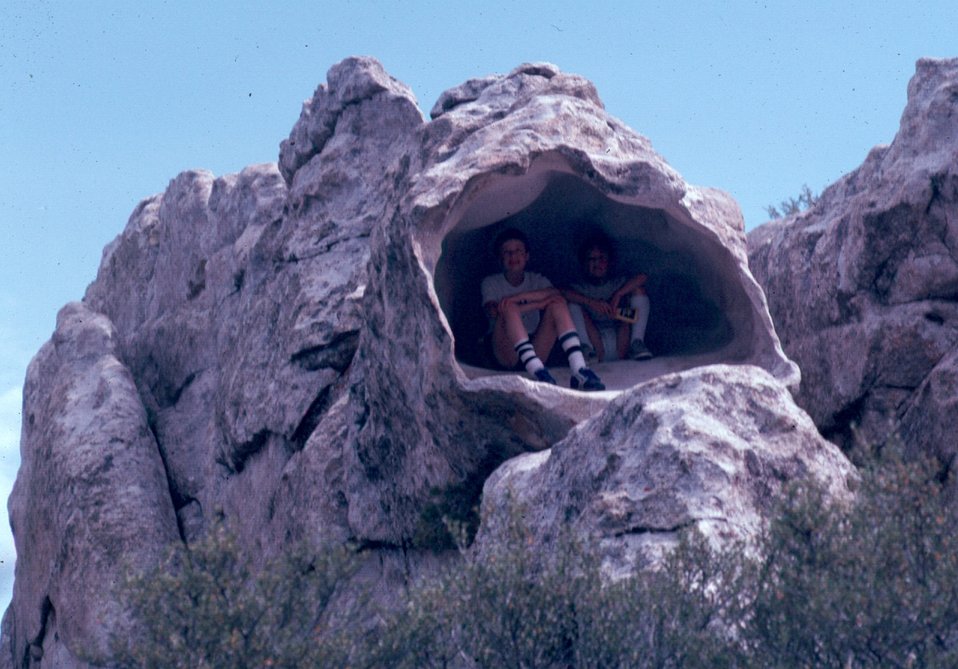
Cave at Silent City Burley Field Office USRD Upper Snake River District